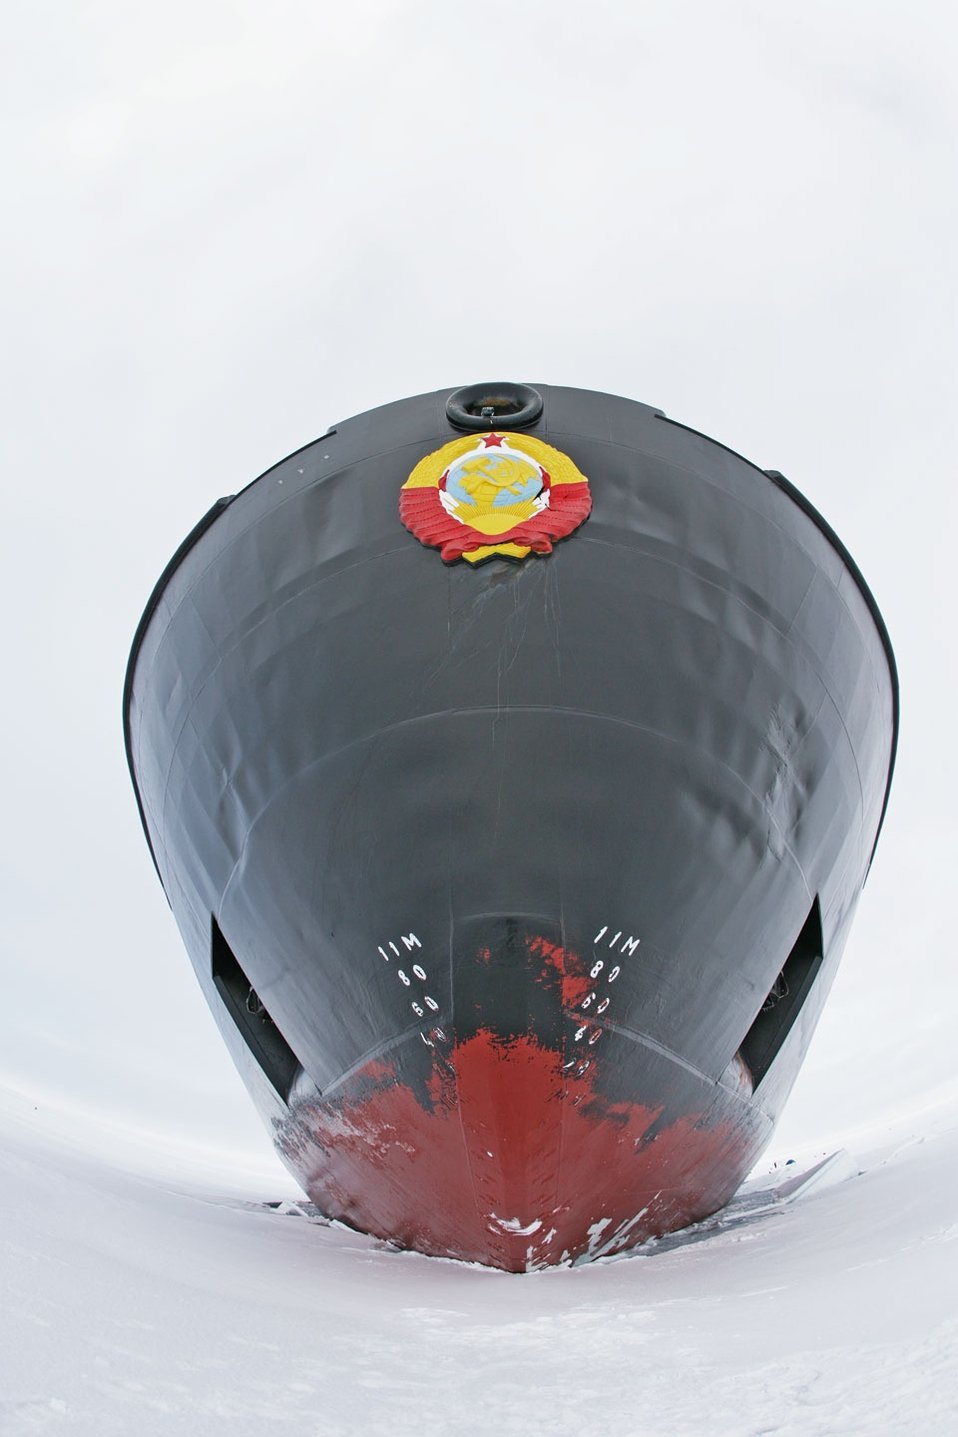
The bow of the KAPITAN DRANITSYN on the ice.